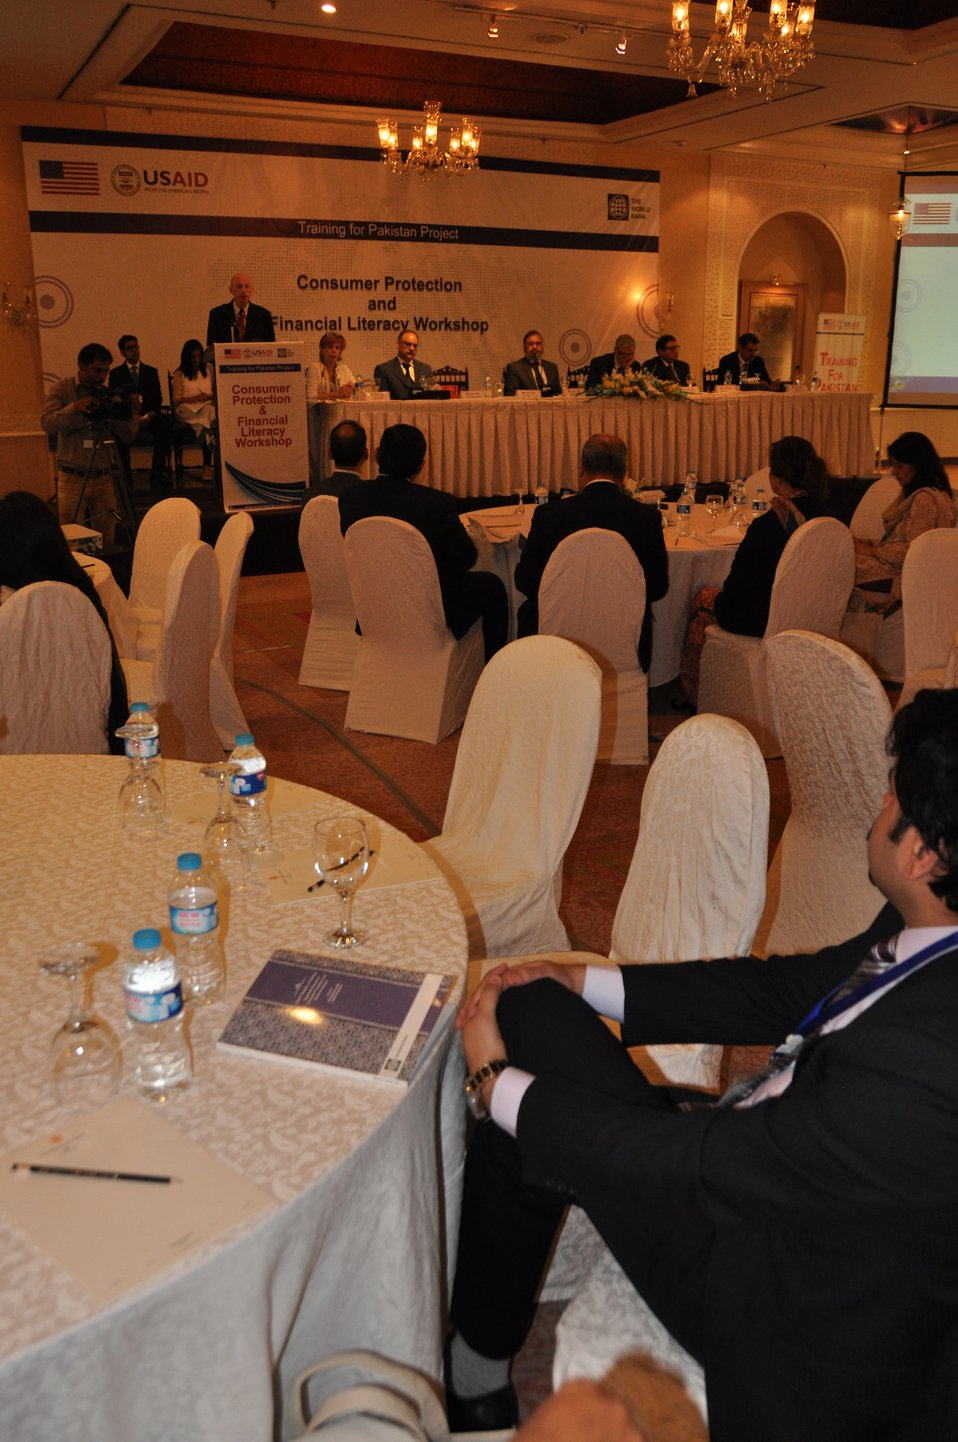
Consumer Protection and Financial Literacy workshop 06

USAID supported study to build public confidence in financial institutions; encourage savings and long-term investments